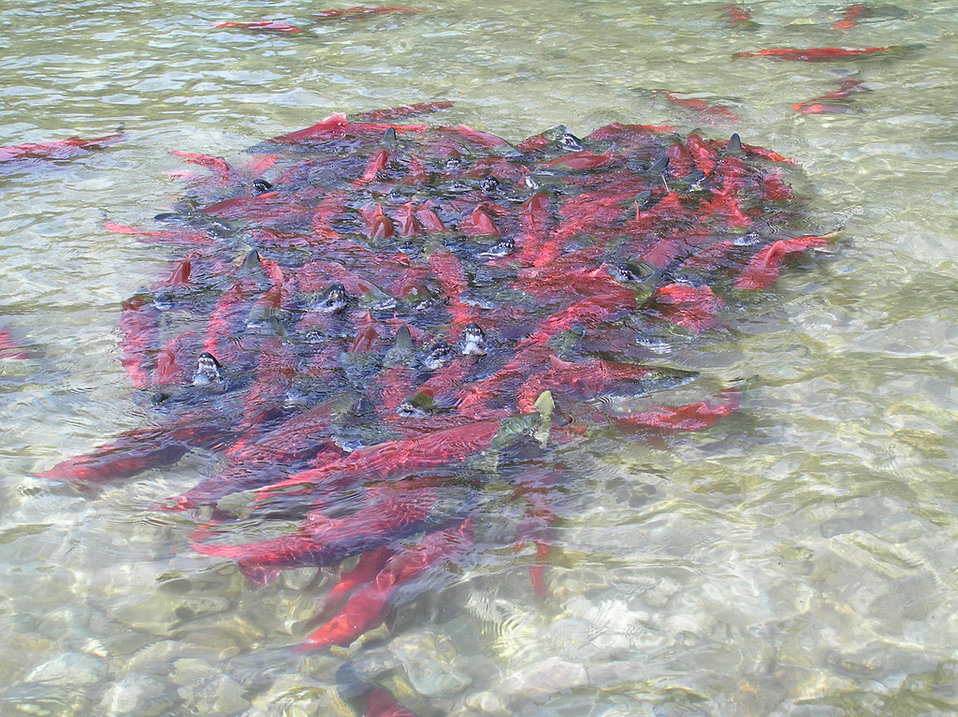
August 2004, Bristol Bay sockeye 'mob'

Similar clusters of sockeye salmon can be seen up and down Bristol Bay's rivers during spawning season.

This photo was taken on the Wood River, which flows into the Nushagak River just north of Dillingham, Alaska.
Photo courtesy of Thomas Quinn, University of Washington

Visit www.epa.gov/bristolbay for more information about EPA's Bristol Bay Watershed Assessment